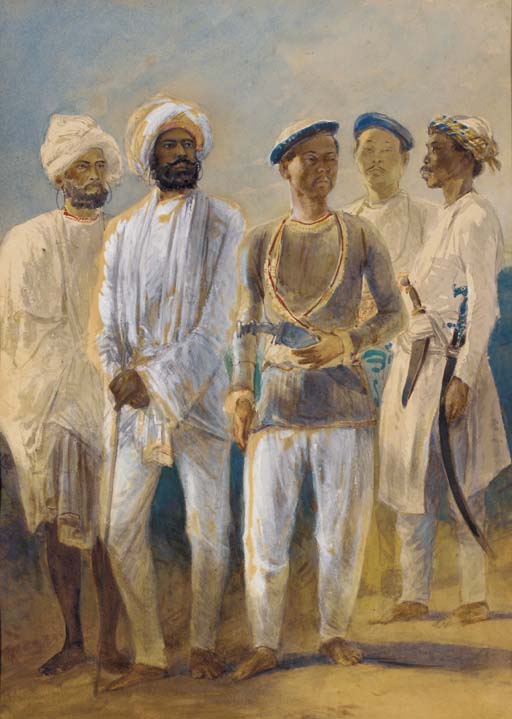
'Five Sikhs and Gurkhas,'